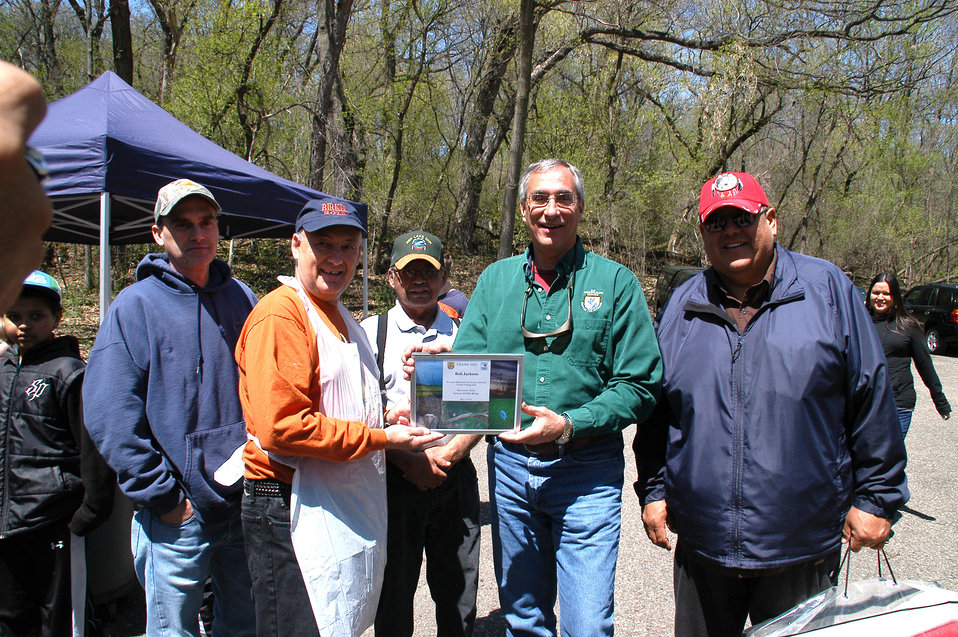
Longtime Volunteer of Kid's Fishing Day, Bob Jackson, Recieves Plaque of Appreciation from Regional Director Tom Melius

From the Red Lake Band of Chippewa Indians Department of Natural Resources, pictured with Bob Jackson and Tom Melius (from left to right) includes, Pat Brown, Fisheries Program Director, Herman Lussier, Fisheries Technician and Al Pemberton, Natural Resource Director.